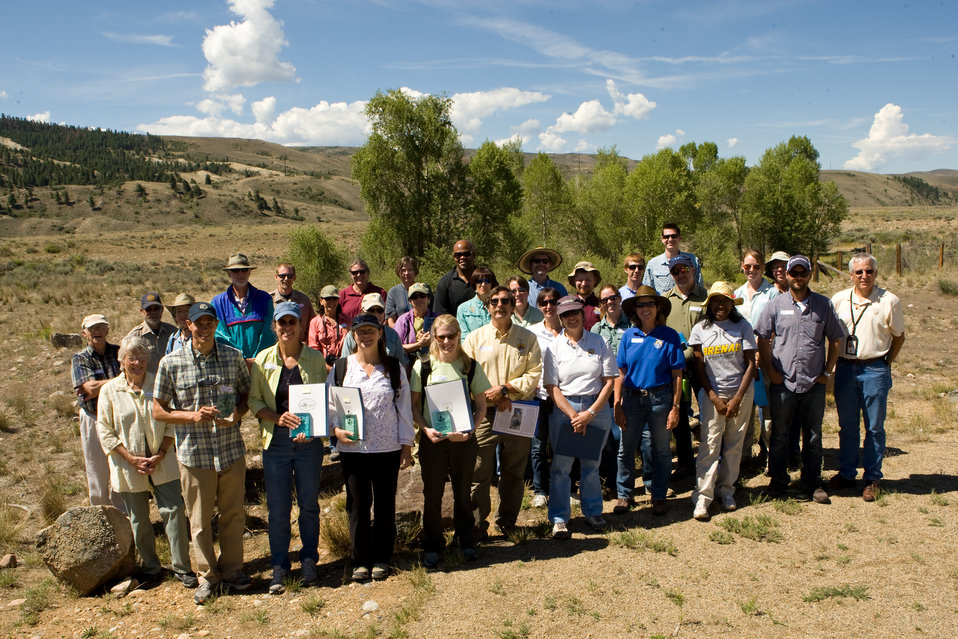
Group Photo 1

The Colorado Rare Plant Conservation Initiative (RPCI) is a partnership of 23 statewide and regional agencies, private organizations, and academic institutions working to conserve 121 rare plants in Colorado. As part of these efforts the group developed the Colorado Rare Plant Conservation Strategy, developed Best Management Practices to reduce energy development impacts, addressed climate change, and developed focused strategies for the conservation of individual species at eight priority landscapes. The group has also worked to coordinate volunteer efforts for plant conservation across the state.